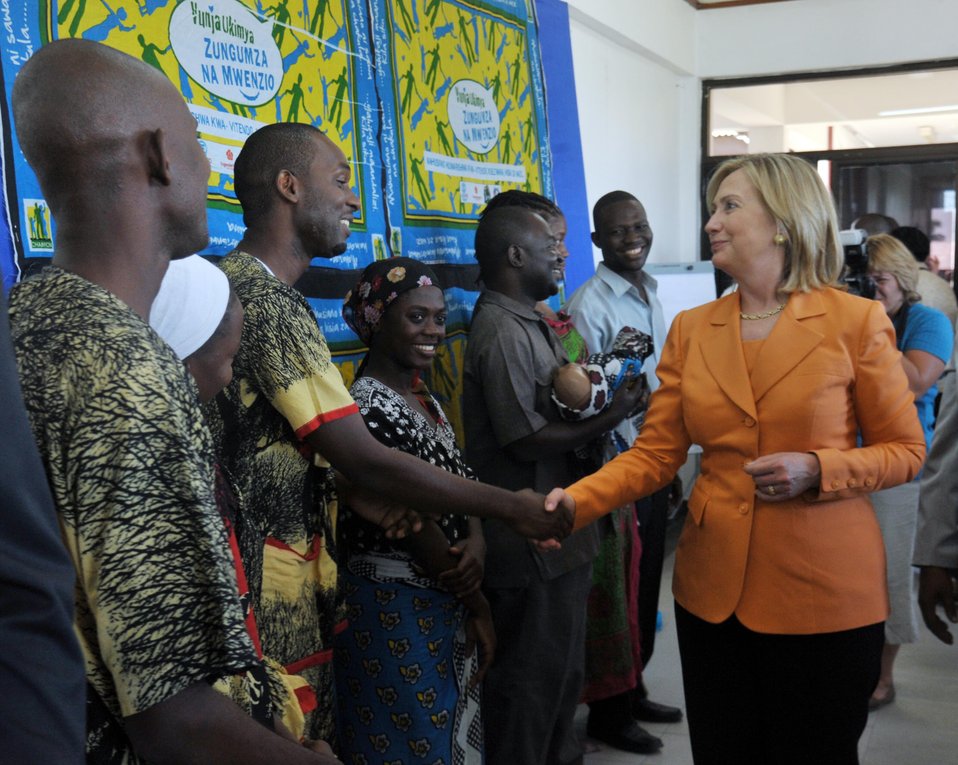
Secretary Clinton Meets With Patients and Health Workers

U.S. Secretary of State Hillary Rodham Clinton meets with patients and health workers, at the Buguruni Health Center in Dar es Salaam, Tanzania, on June 12, 2011.